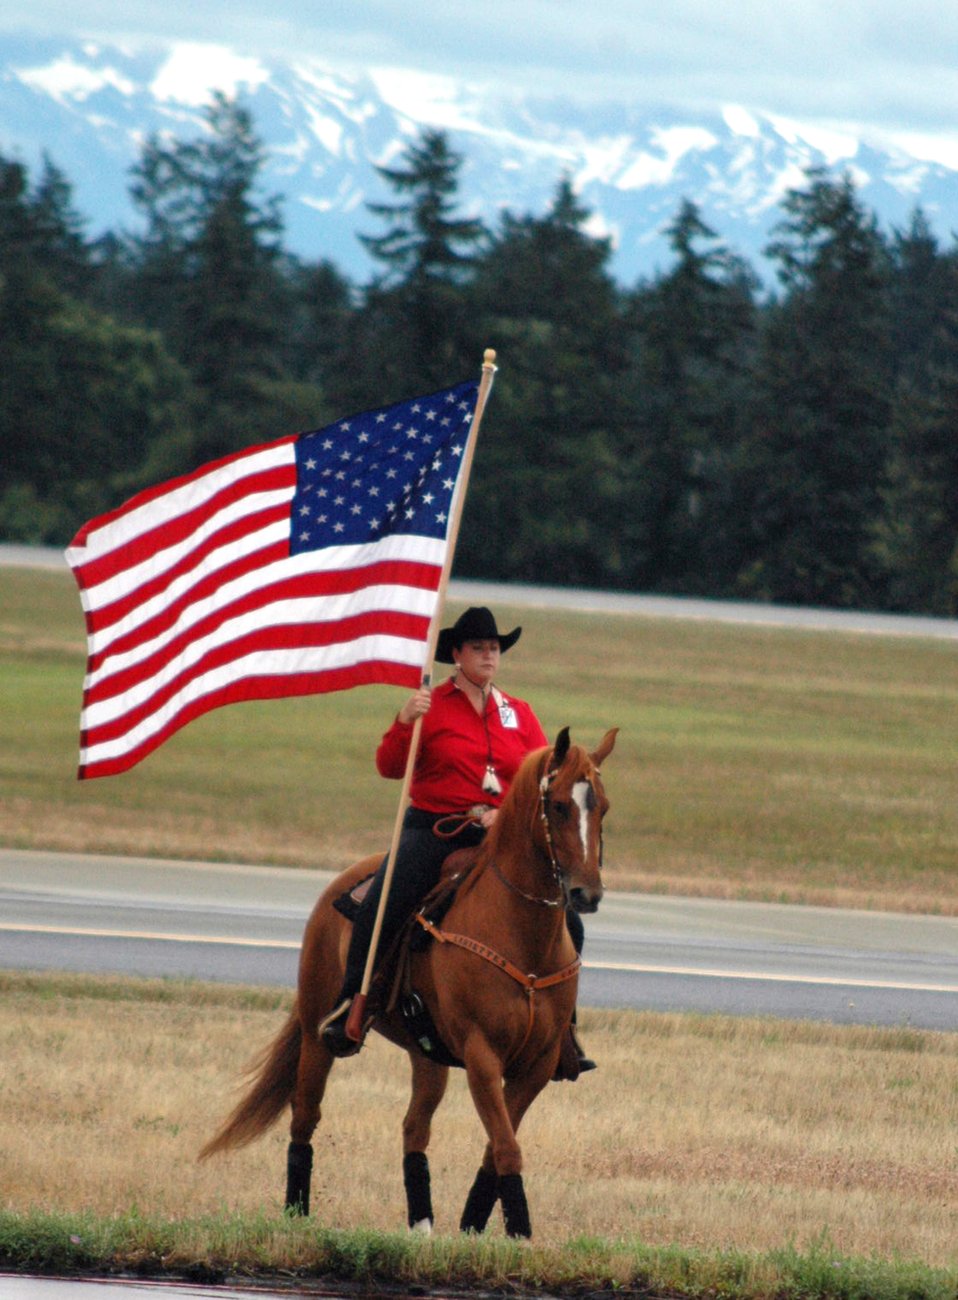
Opening ceremonies mark official start for Air Mobility Rodeo 2007

A horse-riding instructor carries the American flag during the opening ceremony for Air Mobility Rodeo July 22 at McChord Air Force Base, Wash. Rodeo, sponsored by Air Mobility Command, is a readiness competition for U.S. and international mobility air forces. Besides numerous international teams and observers, there are also teams from across the Air Force, Air Force Reserve, Air National Guard and the U.S. Marine Corps.